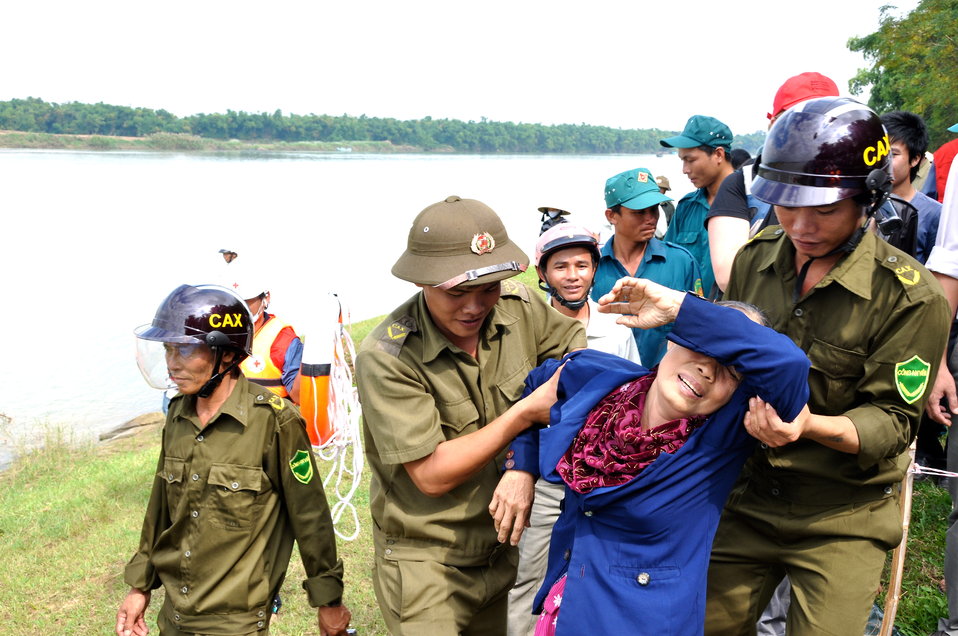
USAID, Red Cross Support Disaster Response Drill in Duy Hoa Commune, Quang Nam Province

Duy Hoa Commune, Quang Nam Province
December 5, 2012